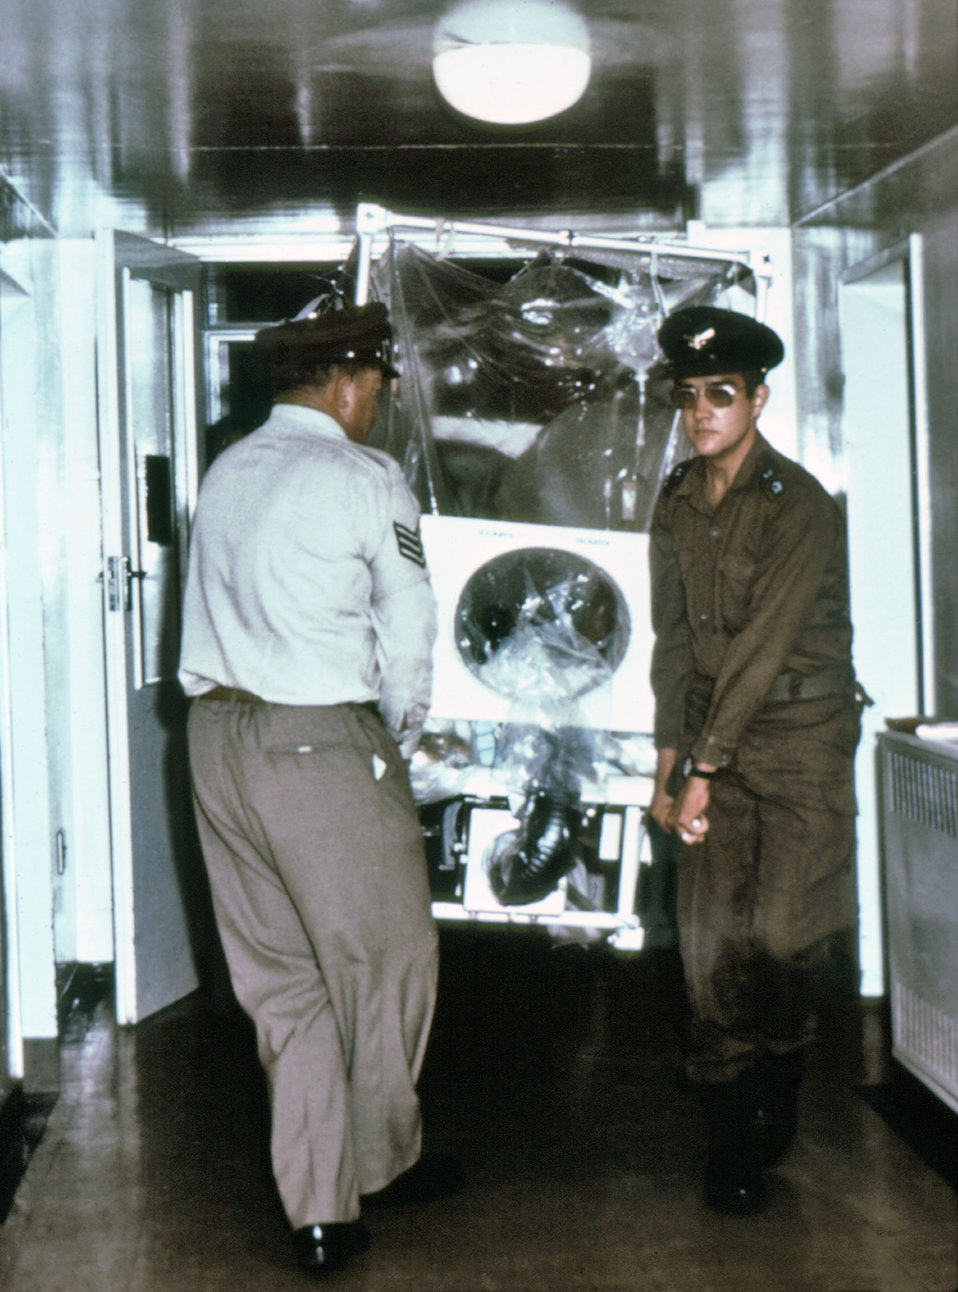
This 1976 photograph, taken inside the Johannesburg Fever Hospital, showed these South African Air Force personnel carrying an isolator unit within which was suspected Ebola patient Del Conn.